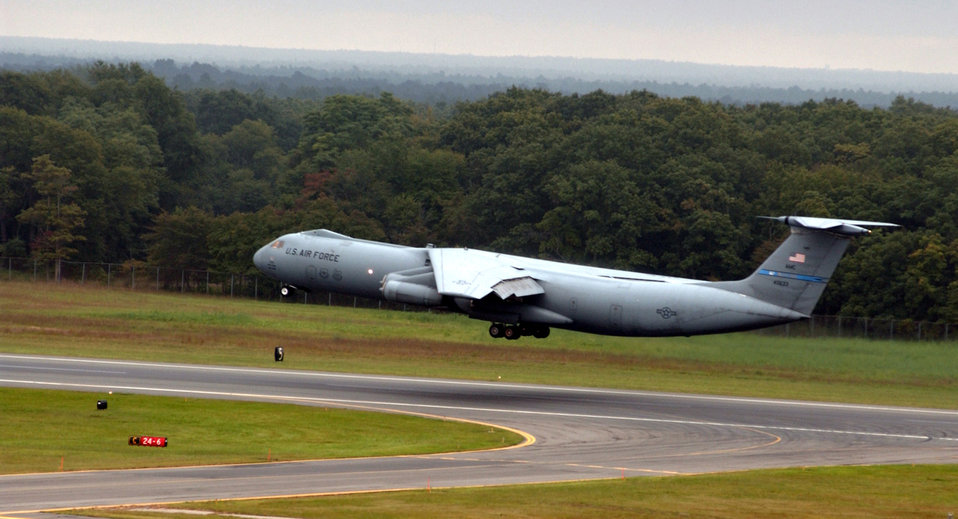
Last active-duty C-141B Starlifter makes final flight

MCGUIRE AIR FORCE BASE, N.J. -- The final C-141B Starlifter to leave here takes off Sept. 16. It is heading to permanent storage at Davis-Monthan Air Force Base, Ariz.